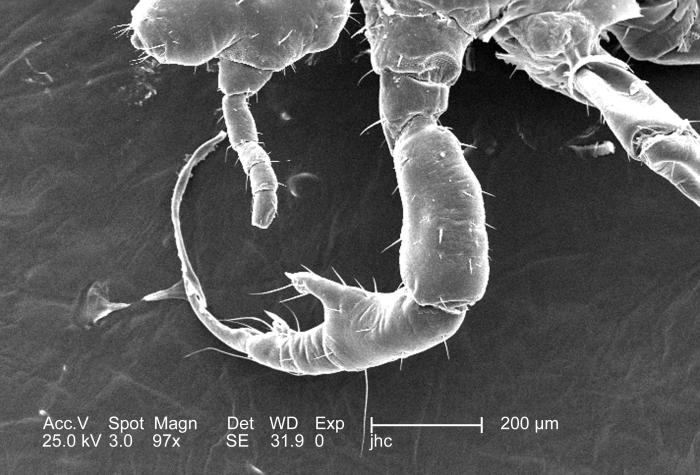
Under a relatively low magnification of 97x, this 2006 scanning electron micrograph (SEM) depicted a dorsal view of a male body louse, Pediculus humanus var. corporis. Occupying the field of view, was the insect's left leg of its first pair of legs. There was a piece of debris attached to the distal claw tip of this appendage. The 'jointed' nature of its extremities, designates this organism as a member of the phylum Arthropoda, and the fact that there are three pairs of legs, the louse is, thereby, placed into the class, Insecta. Note the small, 'hair-like' structures adorning the exoskeletal surface of this insect. These are known as 'setae', and are not hairs at all, but extensions of the chitinous exoskeletal surface, which provide the organism with sensorial data about its surroundings.